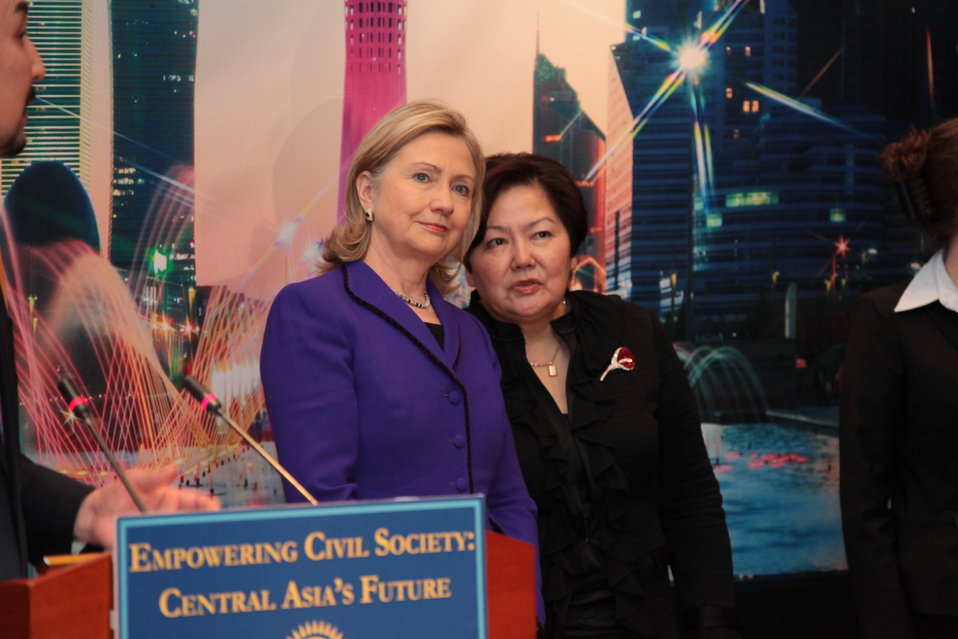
Secretary Clinton and Kazakh Ambassador Jarbussynova Participate in a Town Hall

U.S. Secretary of State Hillary Rodham Clinton and Kazakh Ambassador-at-Large Madina Jarbussynova participate in a town hall on “Empowering Civil Society for Central Asia’s Future” in Astana, Kazakhstan, on November 30, 2010.